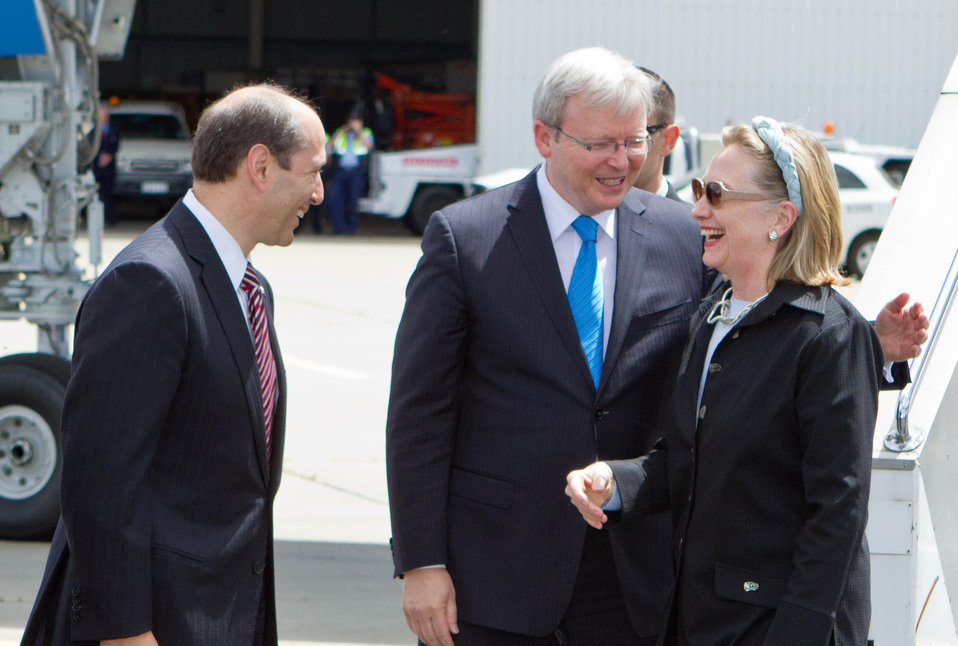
Secretary Clinton Is Greeted By Ambassador Bleich and Australian Foreign Minister Rudd

U.S. Secretary of State Hillary Rodham Clinton enjoys the warm welcome from Australian Foreign Minister Kevin Rudd and U.S. Ambassador to Australia Jeff Bleich at the Melbourne Airport in Melbourne, Australia, on November 7, 2010.